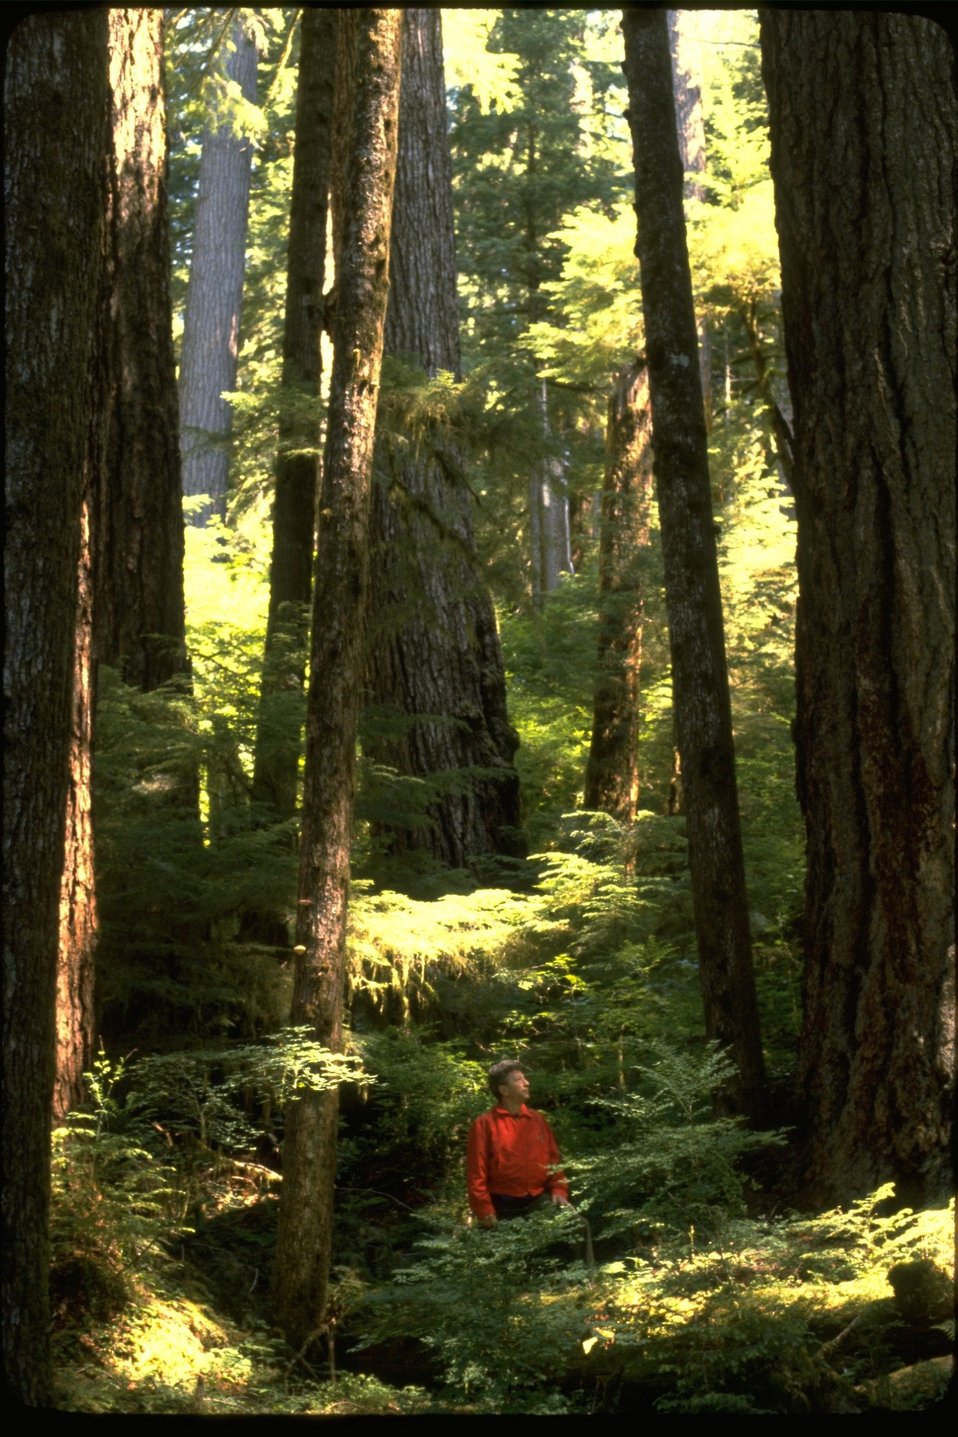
Person wandering through the Valley of the Giants.